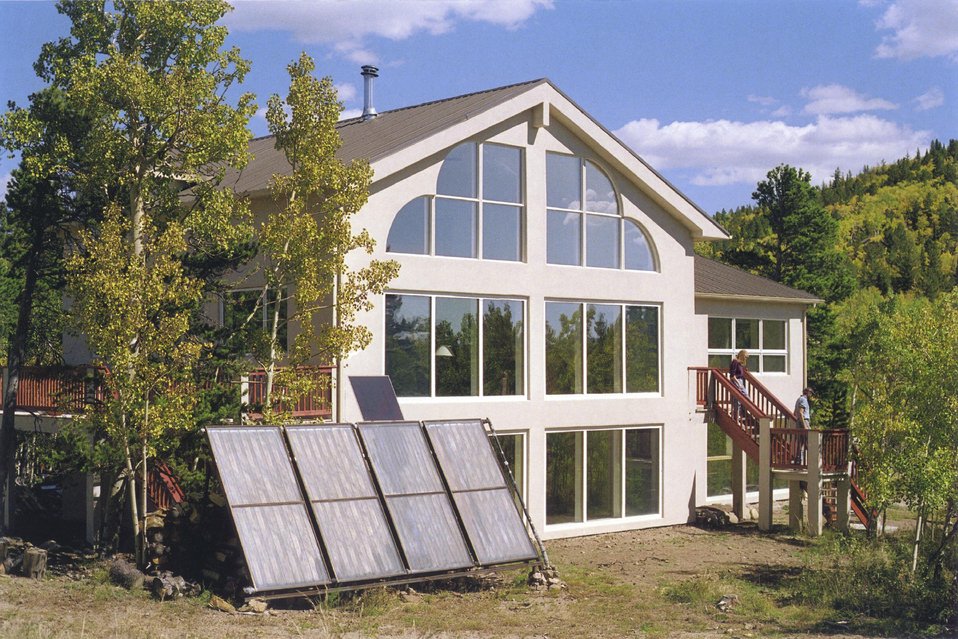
PRIVATE HOME LOCATED IN IDAHO SPRINGS, COLORADO, PART OF THE 1999 DENVER TOUR OF SOLAR HOMES.

THIS HOME CONSUMES LESS ENERGY THAN A SIMILARLY DESIGNED, CODE COMPLIANT HOUSE. A PHOTOVOLTAIC SYSTEM PROVIDES POWER TO THE HOUSE AND A SOLAR DOMESTIC HOT WATER SYSTEM PROVIDES HOT WATER FOR DOMESTIC AND SPACE HEATING USE.